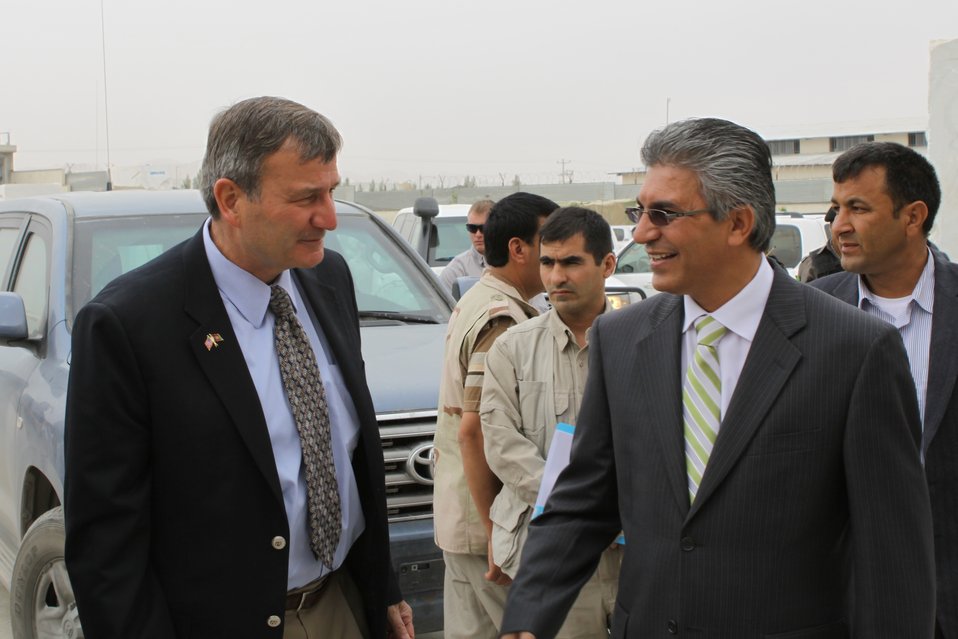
100525 Hirat Marble Conference 048